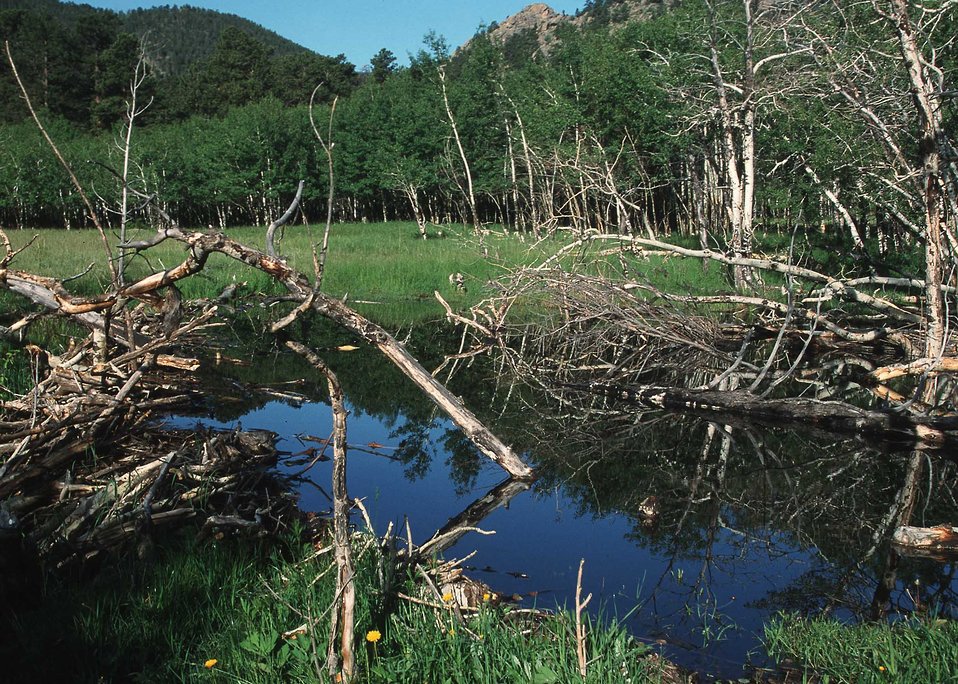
Beaver Dam on Mcgregor Ranch, near RMNP.